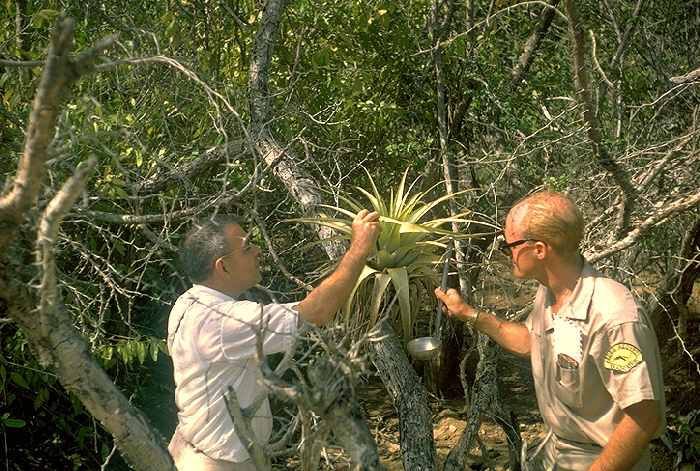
H.D. Pratt and Robert Walsh inspect bromeliad, potential mosquito breeding site, Red Hook, St. Thomas, Virgin Islands.